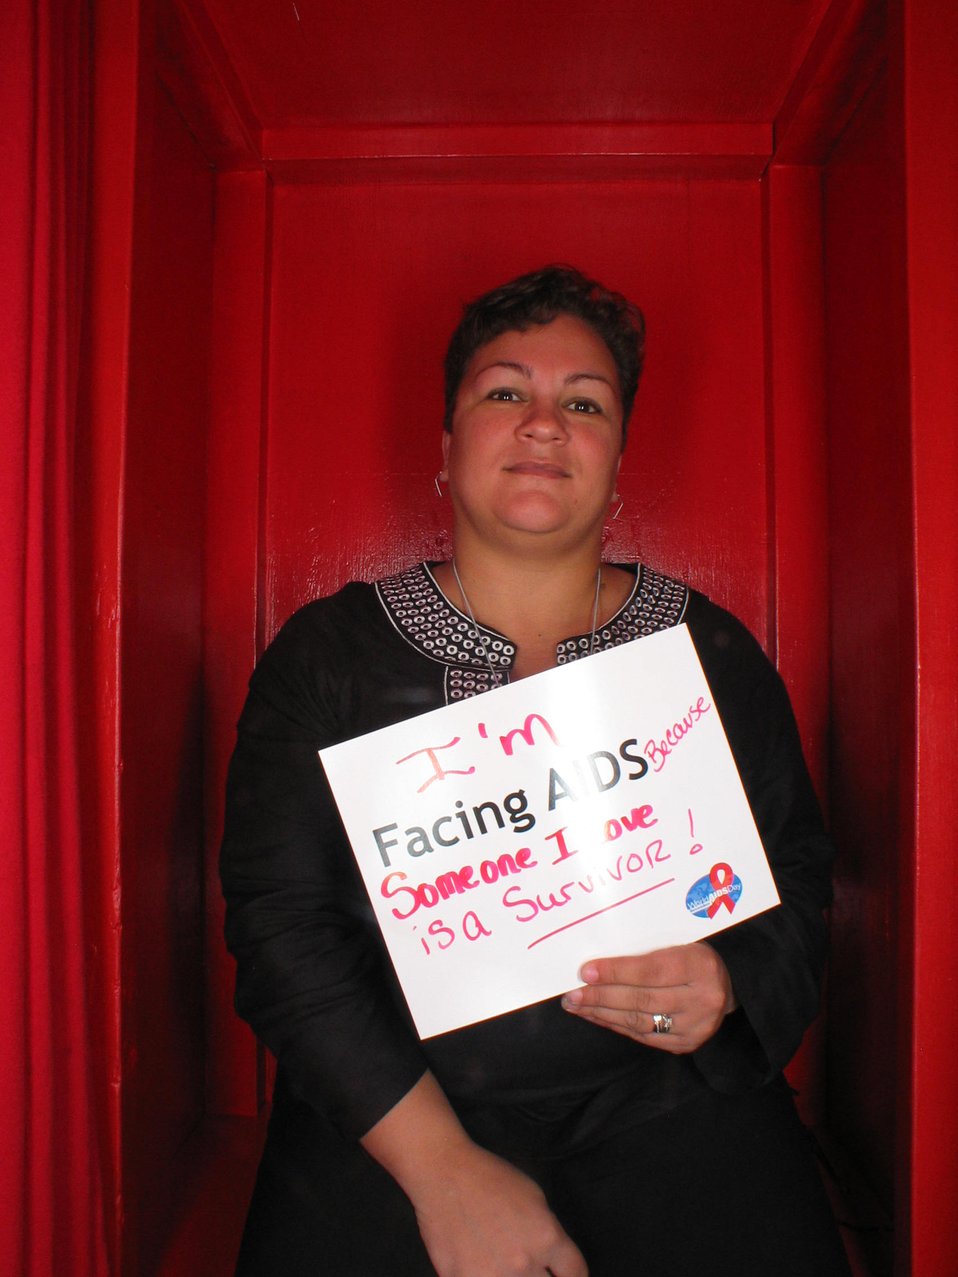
I'm Facing AIDS because someone I love is a survivor